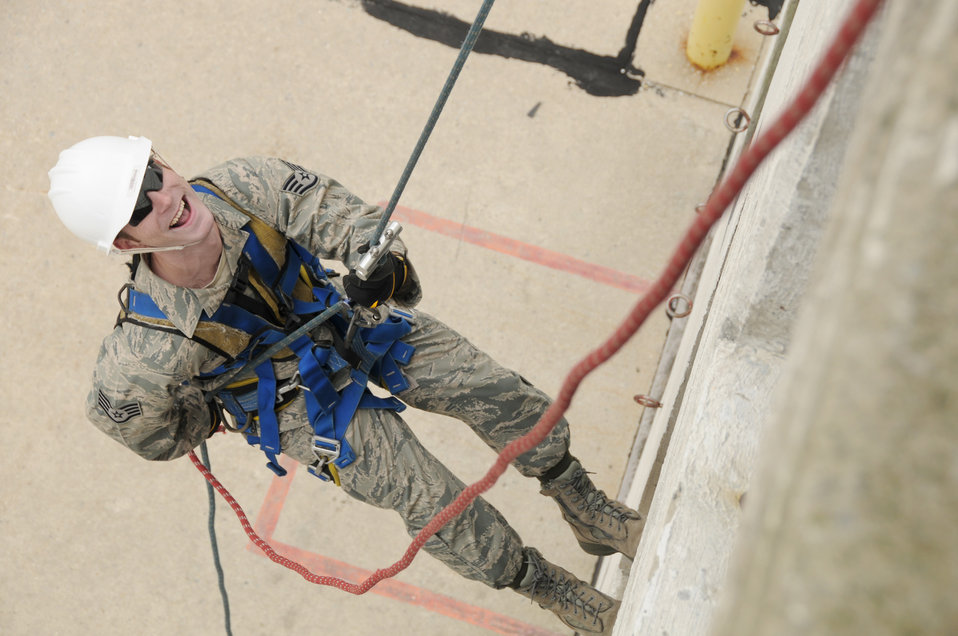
Firefighters on a training mission

Staff Sgt. David Ferguson rappels down the side of a training facility Oct. 5, 2010, at the Toledo Fire and Rescue Department Training Academy in Ohio. Sergeant Ferguson is assigned to the Ohio Air National Guard's 180th Fighter Wing.